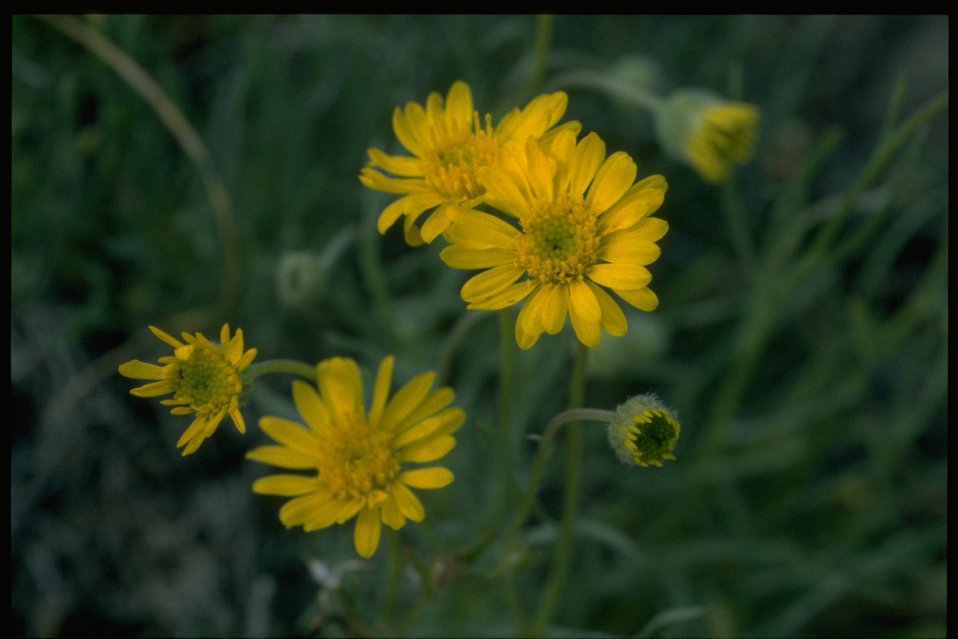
Medium shot of Balsam Root wildflowers.